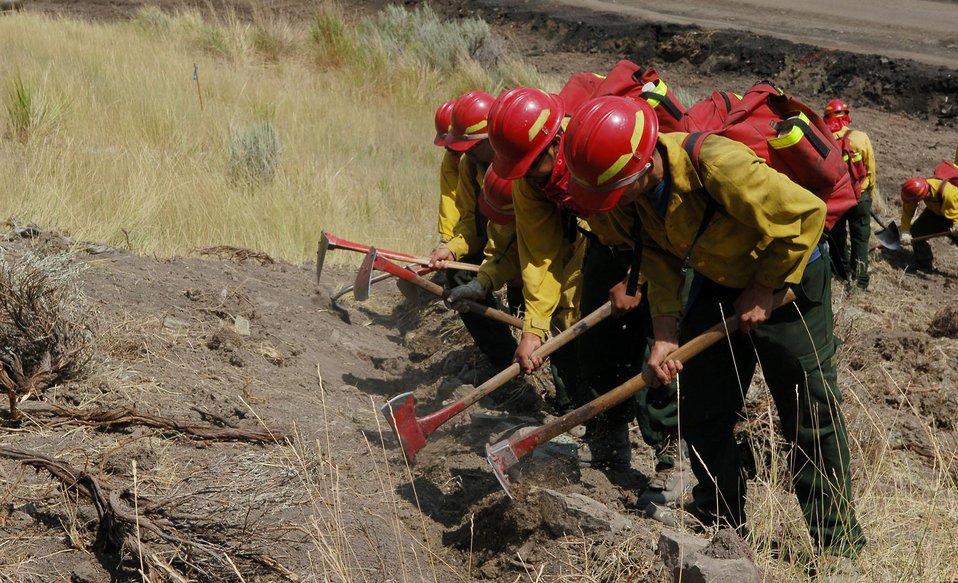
MQ Franko fire crew works to clear brush in path of the Beaver Creek Fire. The Beaver Creek Fire in the Sawtooth National Forest near Hailey, ID began on Aug. 7 2013 by lighting has consumed approximately 111,488 acres and is 94% contained.